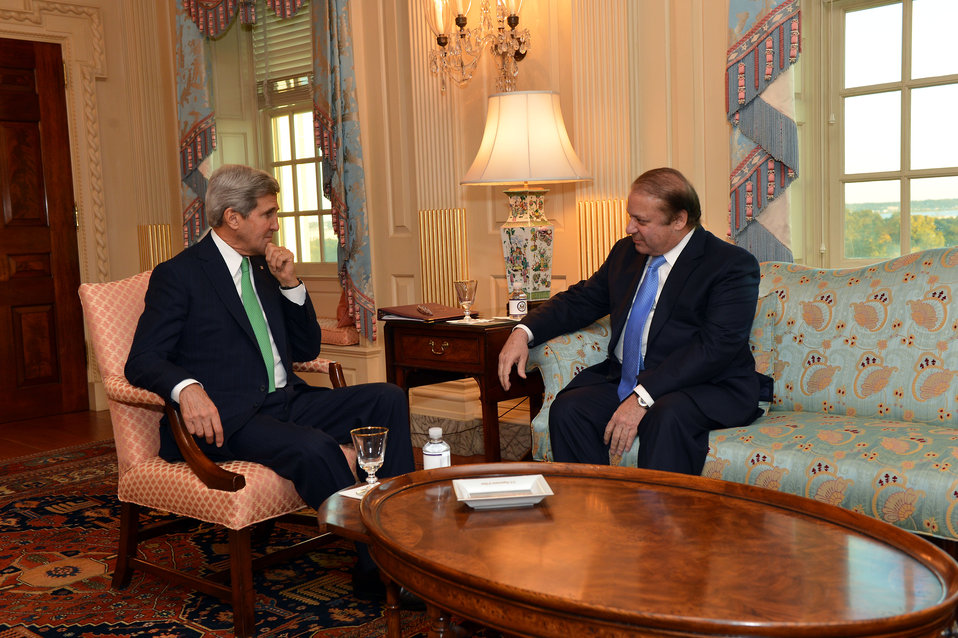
Secretary Kerry Meets With Pakistani Prime Minister Sharif

U.S. Secretary of State John Kerry meets with Pakistani Prime Minister Nawaz Sharif at the U.S. Department of State in Washington, D.C., on October 20, 2013. You can view Secretary Kerry's remarks here: www.state.gov/secretary/remarks/2013/10/215685.htm.